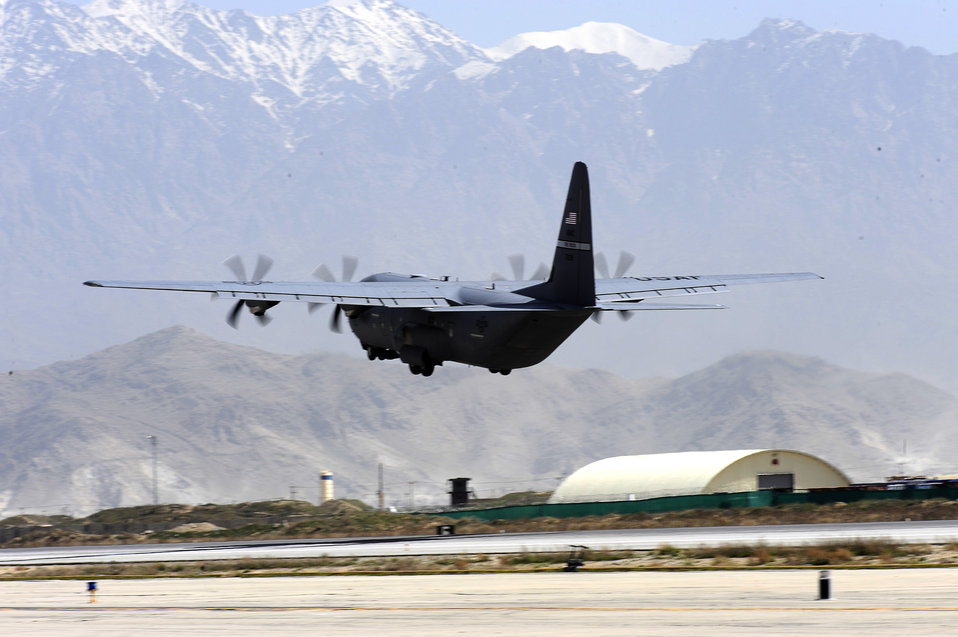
Bagram Airmen provide support

A C-130 Hercules takes off at Bagram Airfield, Afghanistan, April 6, 2010. The 455th Air Expeditionary Wing provides expeditionary combat and combat support to U.S. and coalition forces.